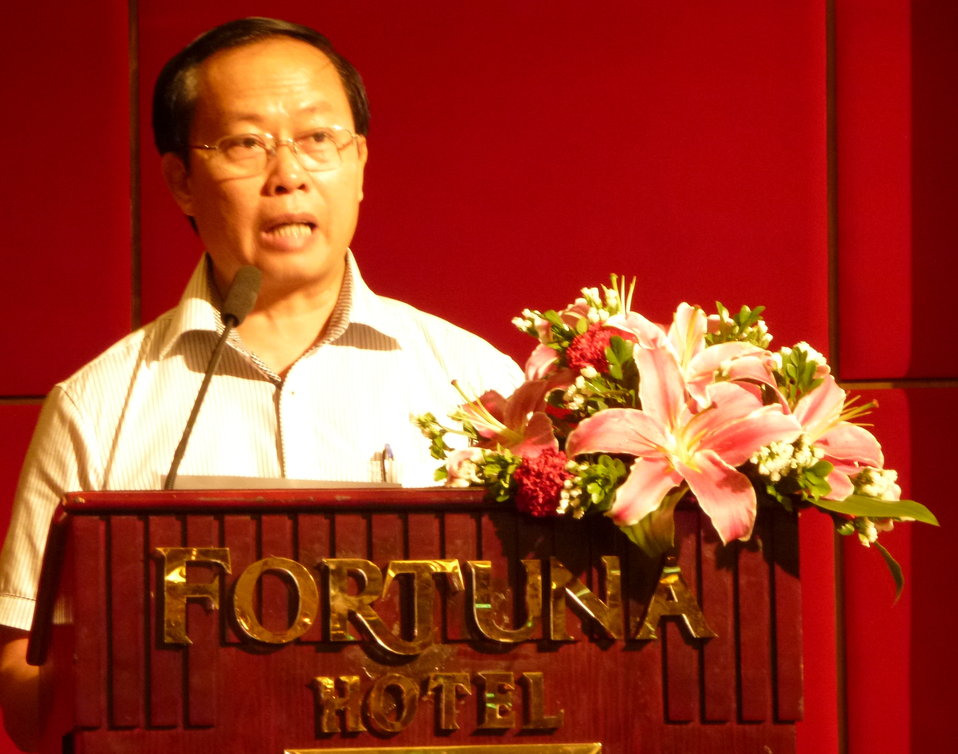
Payment for Forest Environmental Services Workshop

Nguyen Ba Ngai, PhD, Deputy Director General of the Vietnam Administration of Forestry

Hanoi, August 20, 2013